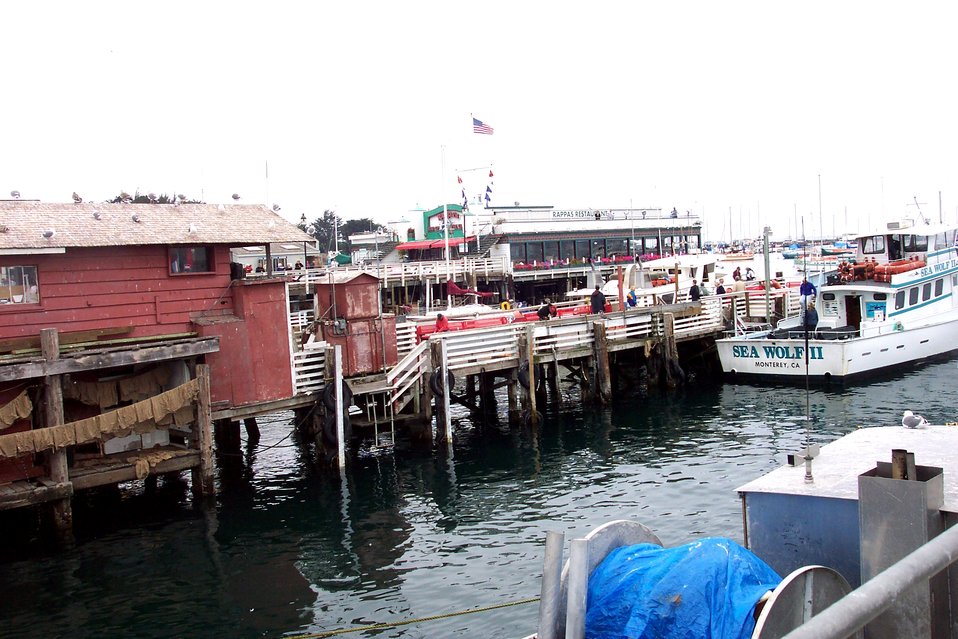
Fisherman's Wharf at Monterey.